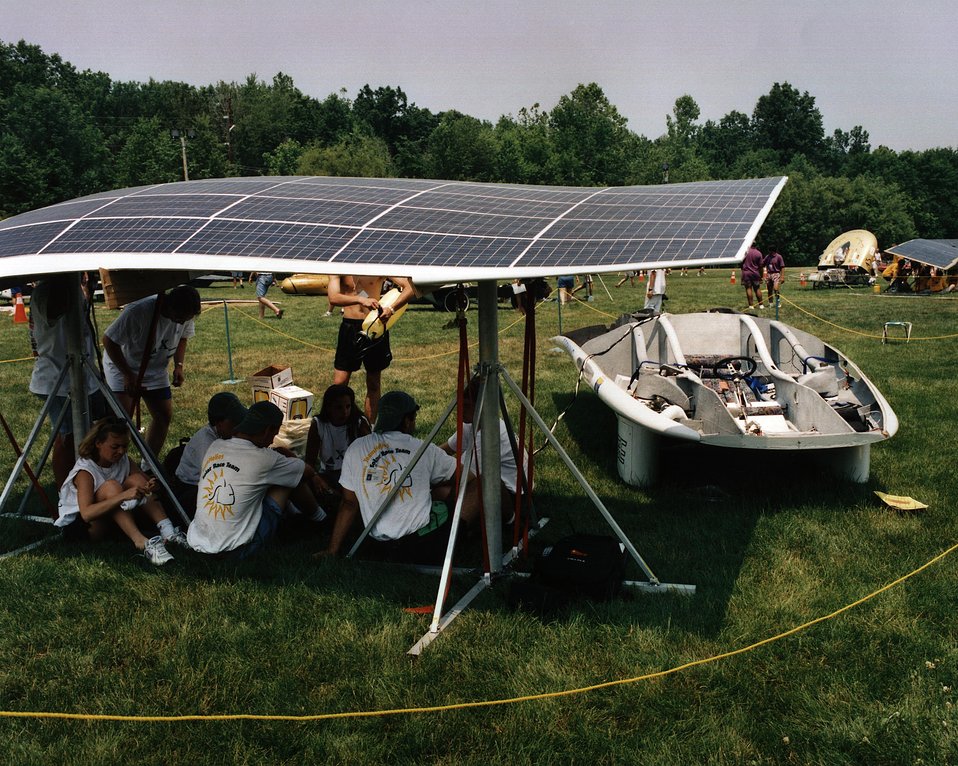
CLARKSON U. TEAM, POTSDAM, NY CATCHING SHADE WHILE RECHARGING VEHICLE 'HELIOS'.